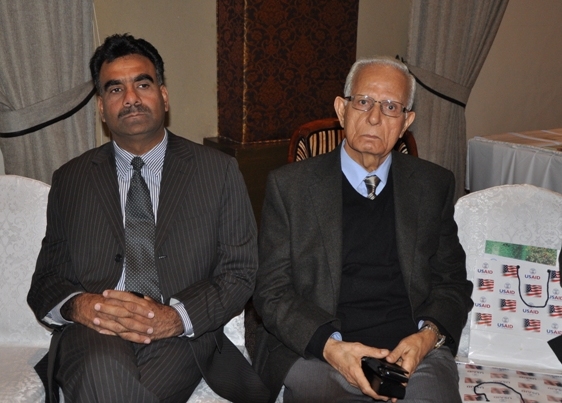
Workshop Participants